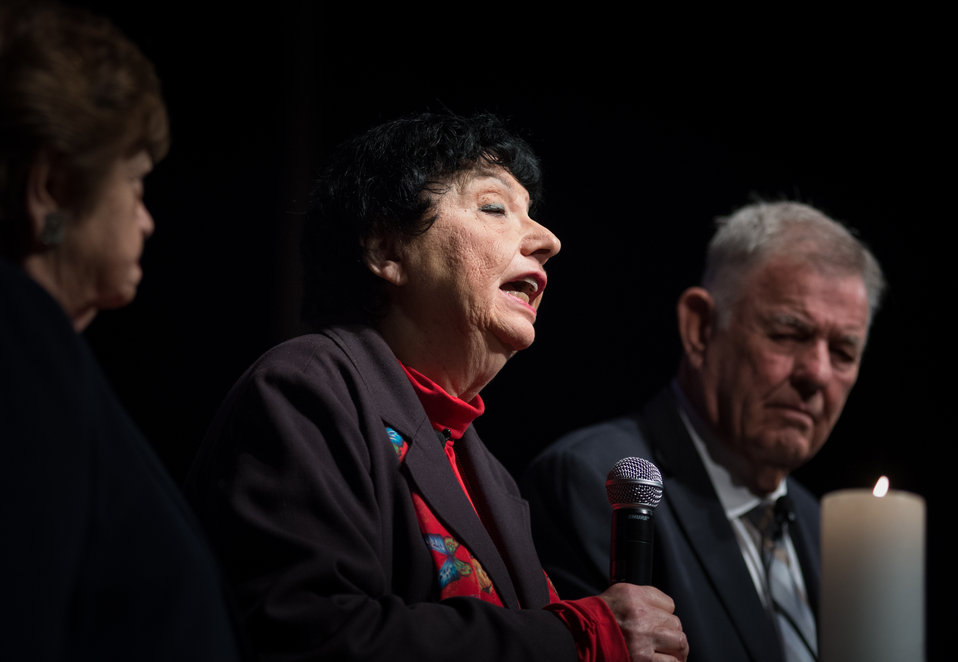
Theresienstadt Concentration Camp German Jewish Holocaust Survivor Inge Auerbacher makes a comment during the candle lighting ceremony, of the 2013 Federal Inter-Agency Holocaust Remembrance Day, at the Lincoln Theater, on Wednesday, April 17, 2013, in Washington, D.C. Since the 1979 President’s Commission on the Holocaust, an annual proclamation signed by the President of the United States recognizes the importance of remembering the atrocities of the Holocaust that should never be forgotten or be ignored.